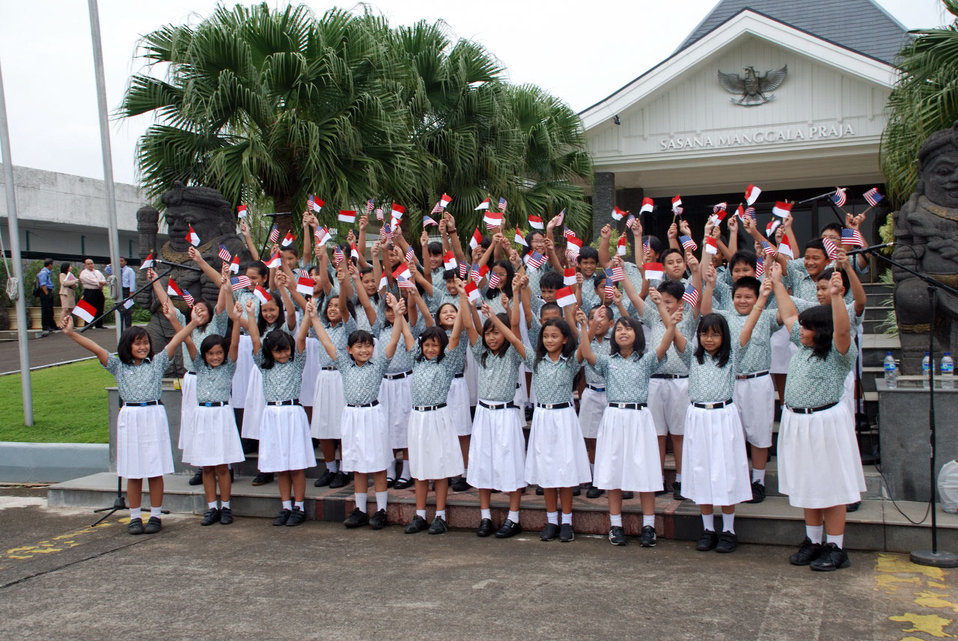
Menteng Elementary School During Secretary Clinton's Visit to Indonesia

Menteng Elementary School 1 Children's Choir wave flags during Secretary Clinton's visit in Jarkarta, Indonesia February 18, 2009.